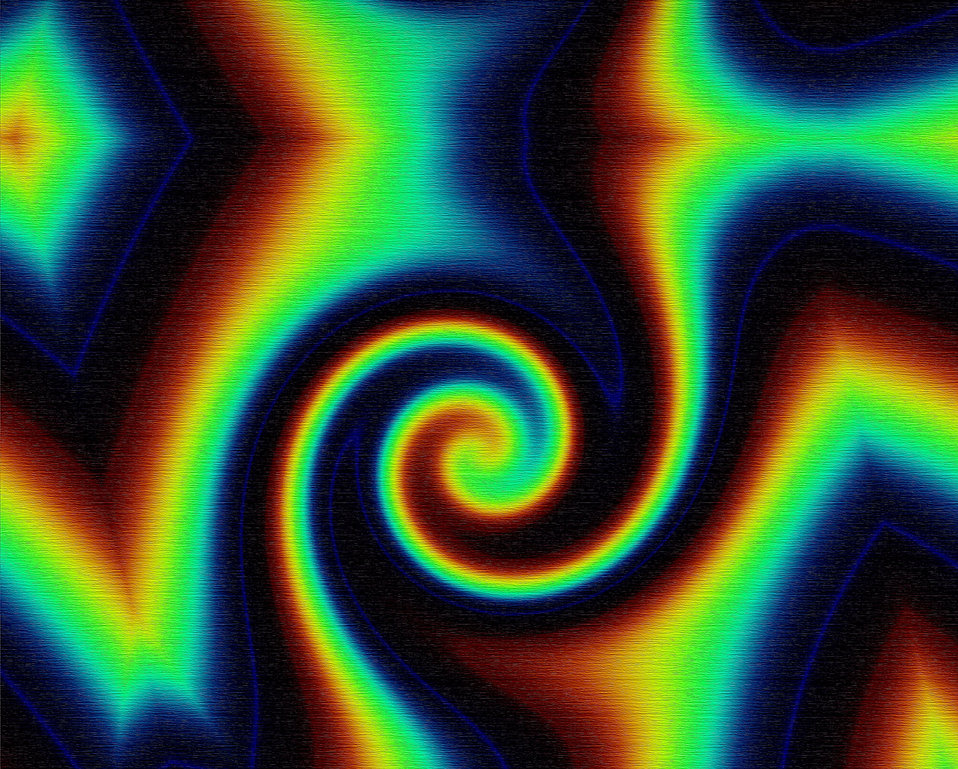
Lilia

Background colorful vortex in structure.